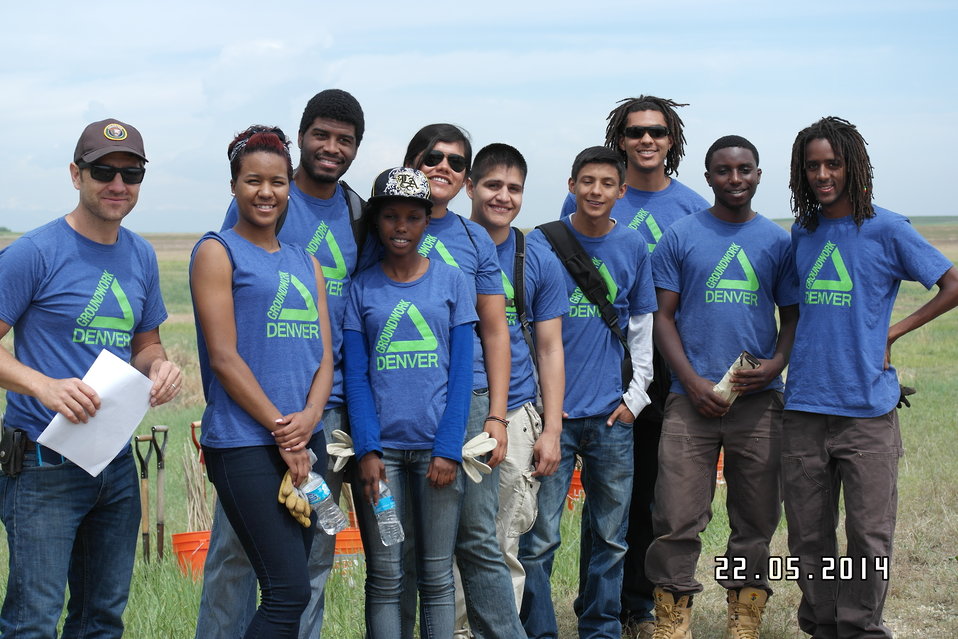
Secretary Jewell Announces $6.7 for Youth Conservation Jobs

Jewell made the announcement at an event at Rocky Mountain Arsenal National Wildlife Refuge outside Denver, Colorado, where she was joined by U.S. Department of Agriculture (USDA) Deputy Under Secretary for Natural Resources and the Environment Arthur “Butch” Blazer; Greg Knadle, Vice President for Government Relations of the National Fish and Wildlife Foundation (NFWF); Refuge Manager David Lucas and youth corps members of Groundwork Denver.